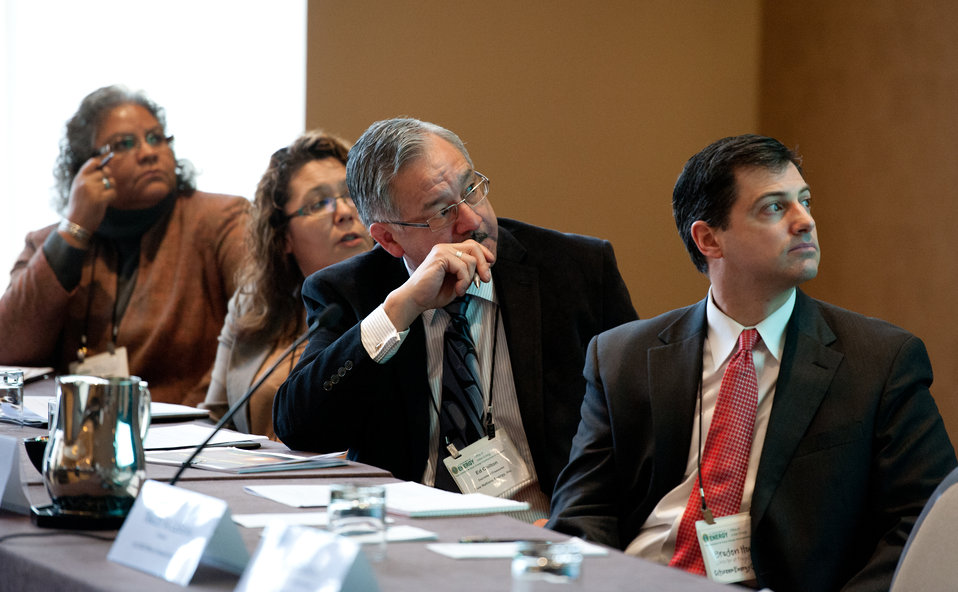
Indian Transmission Forum

Attendees at the DOE Office of Indian Energy Tribal Leader Energy Forum on transmission held February 2012 in Denver, Colorado.